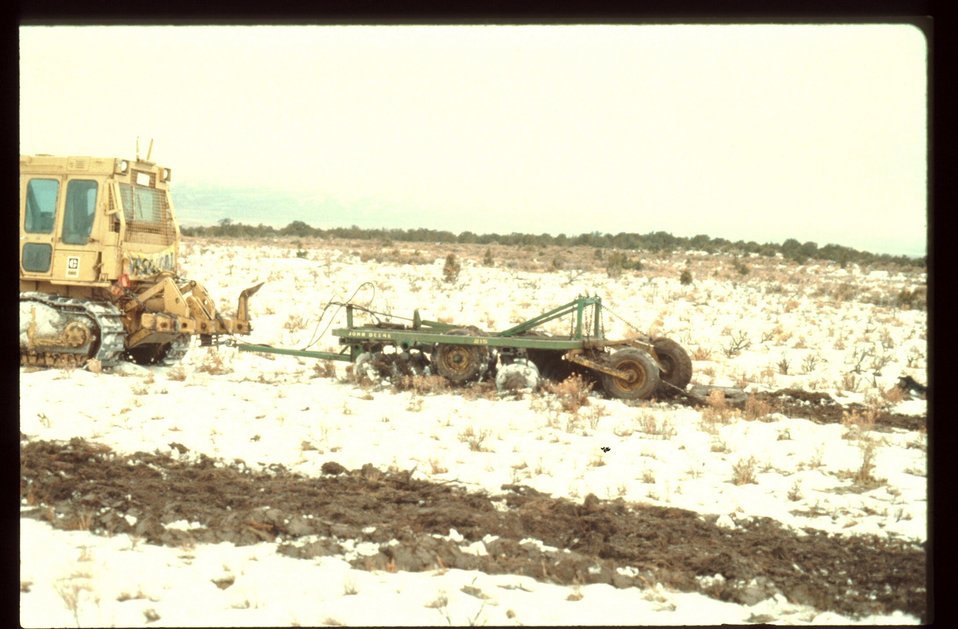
Range Restoration Project